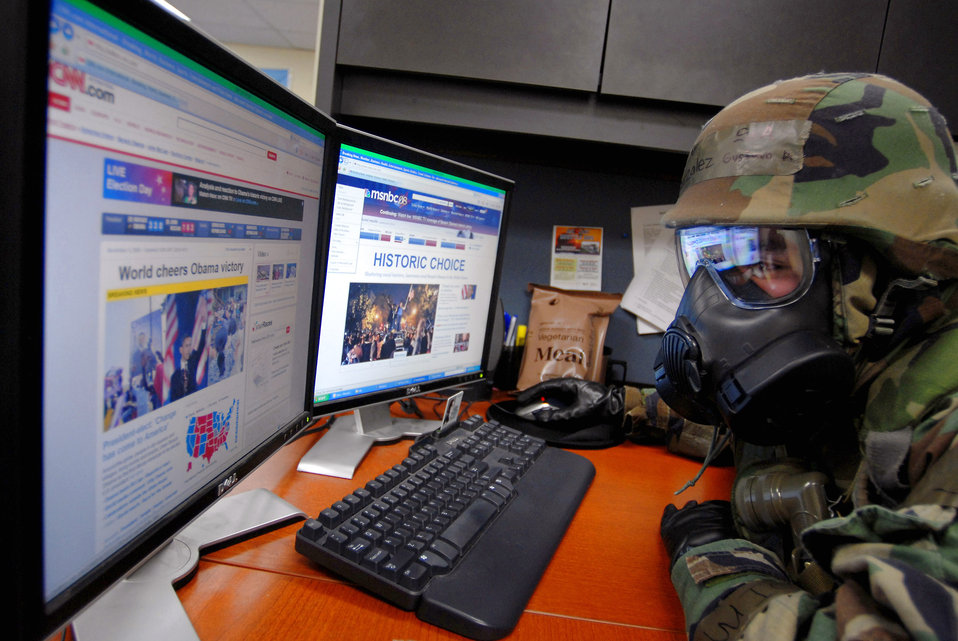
Keeping up with the news

Senior Airmen Gustavo Gonzalez checks the results of the U.S. presidential election Nov. 5 while wearing protective gear during an operational readiness exercise at Kunsan Air Base, South Korea.